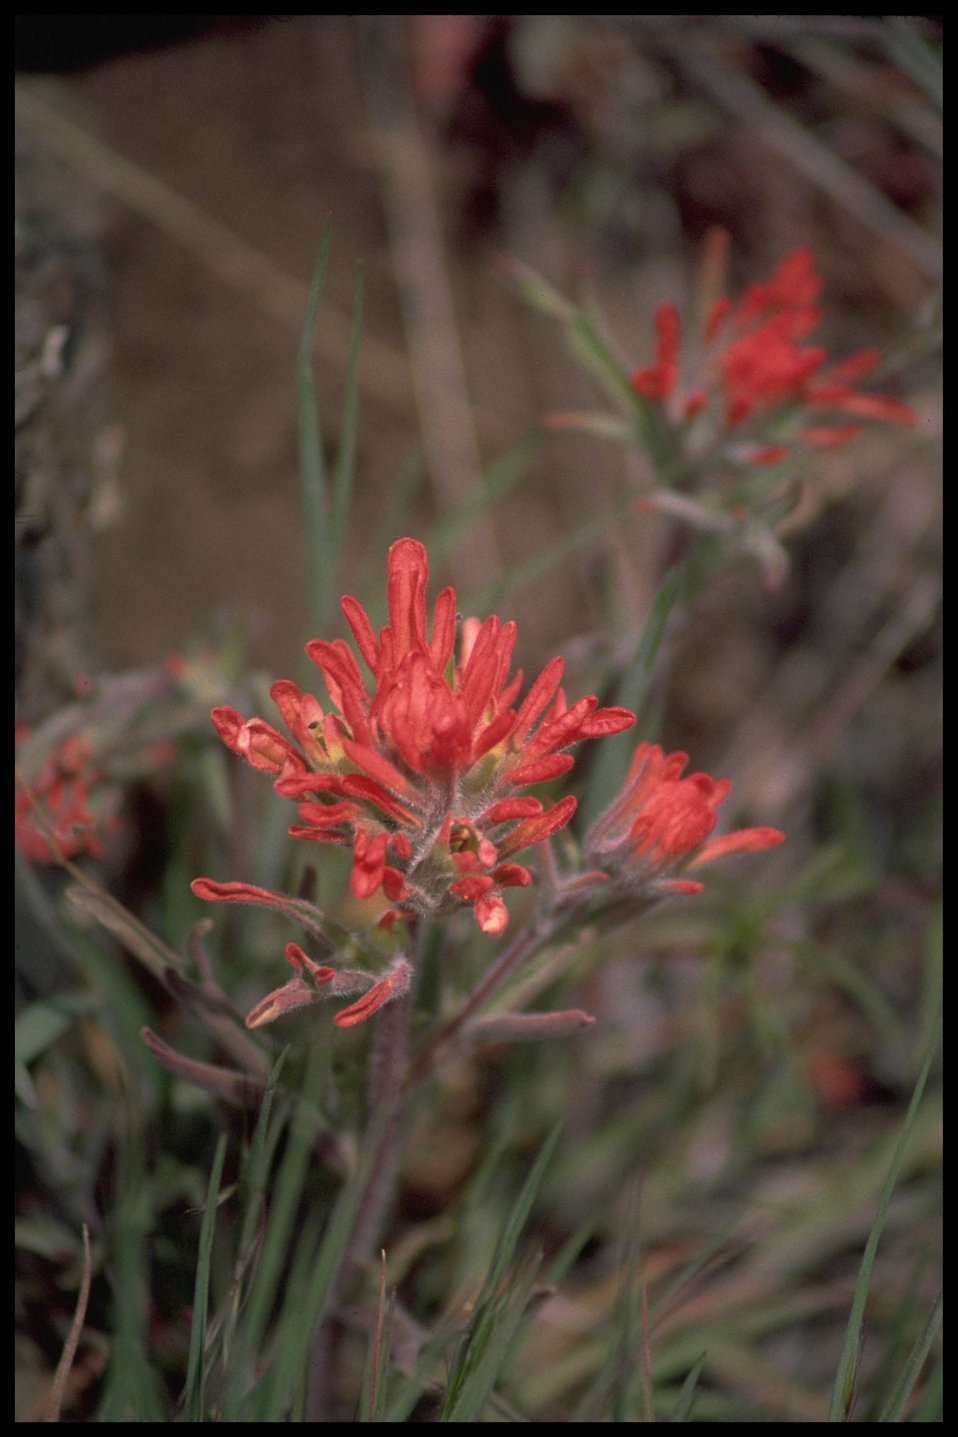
Indian Paintbrush wildflower habitat, Lakeview District.